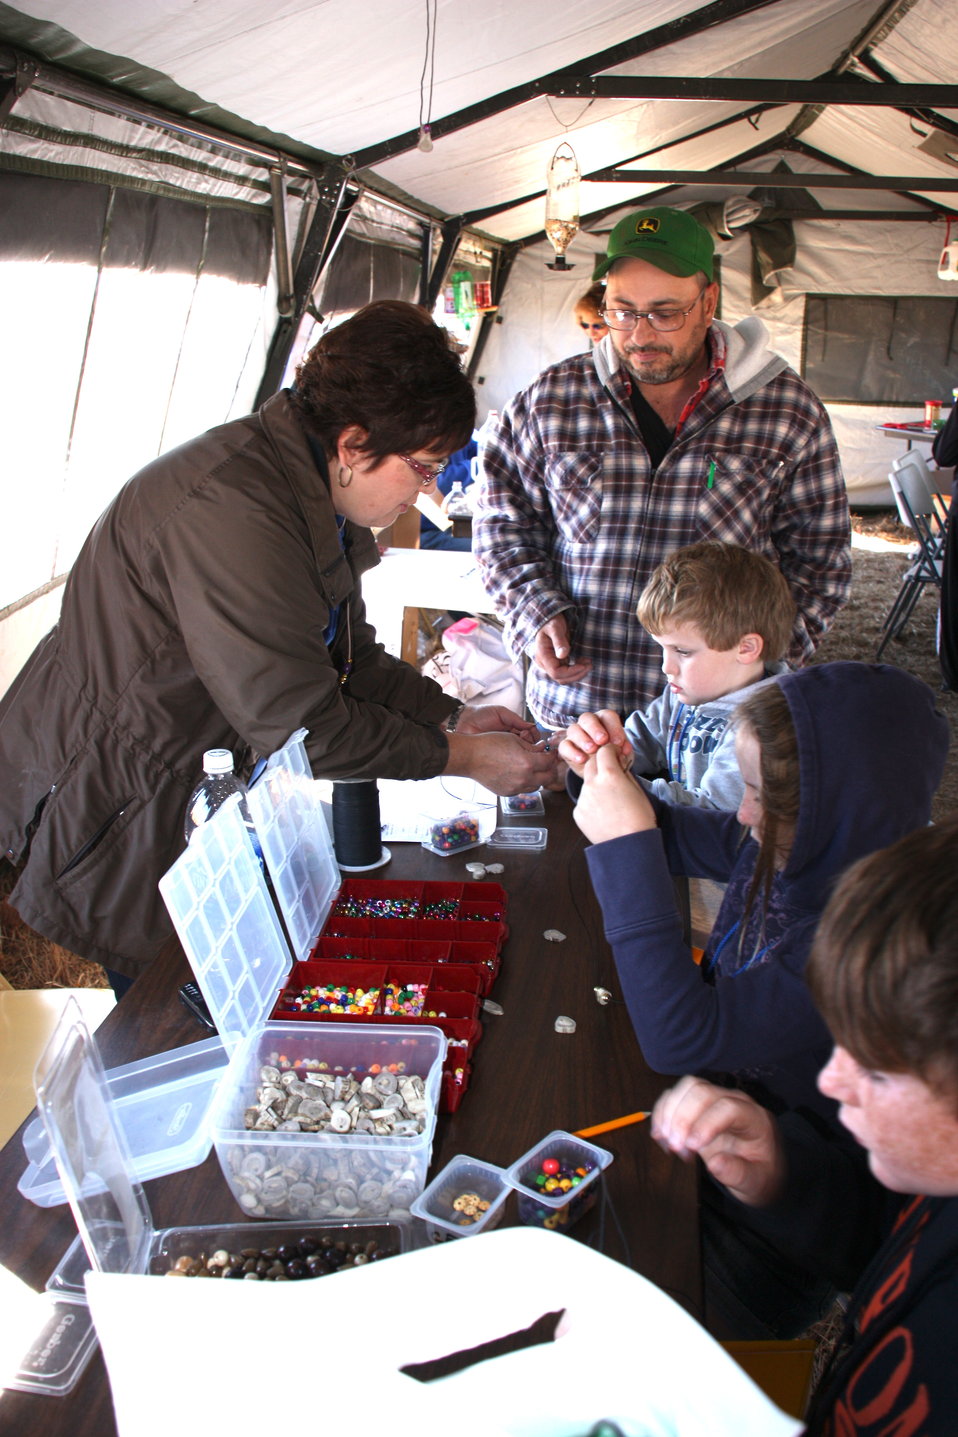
Prairie Fest 2012

Craft Tent